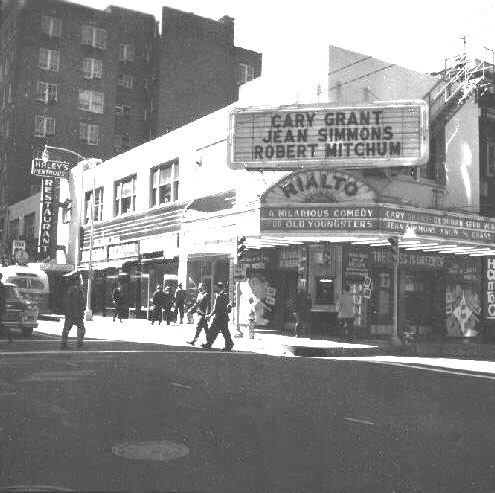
CDC Clinic, 1961